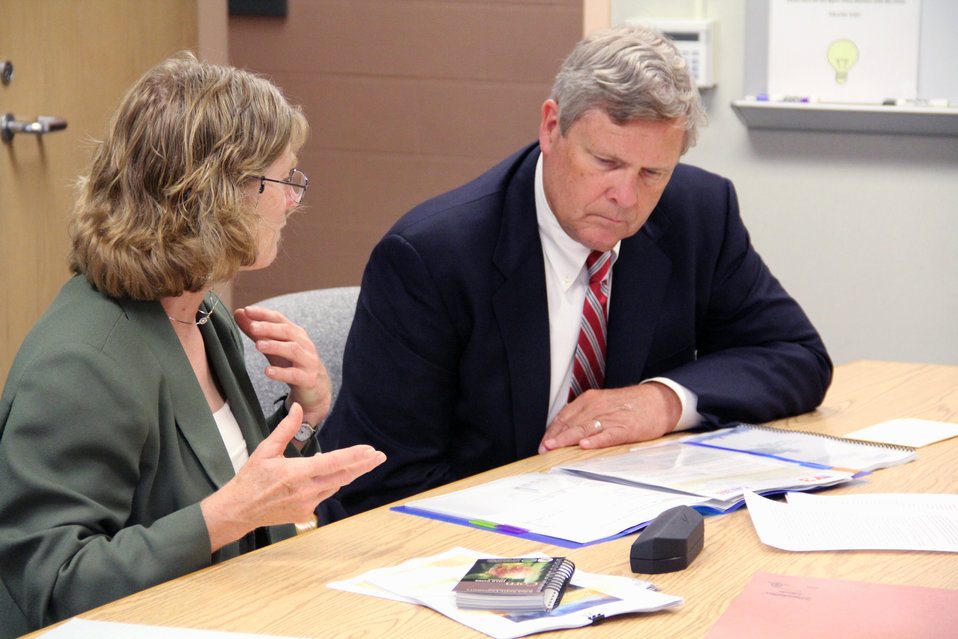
Agriculture Secretary Tom Vilsack listens to Iowa State University Sociology Department professor Dr. Lois Wright Morton explain the recent surveys on producers’ opinions of climate change and its impact on agriculture at the U.S. Department of Agricultue (USDA) National Centers for Animal Health in Ames, IA on Friday, Jun. 6, 2014.